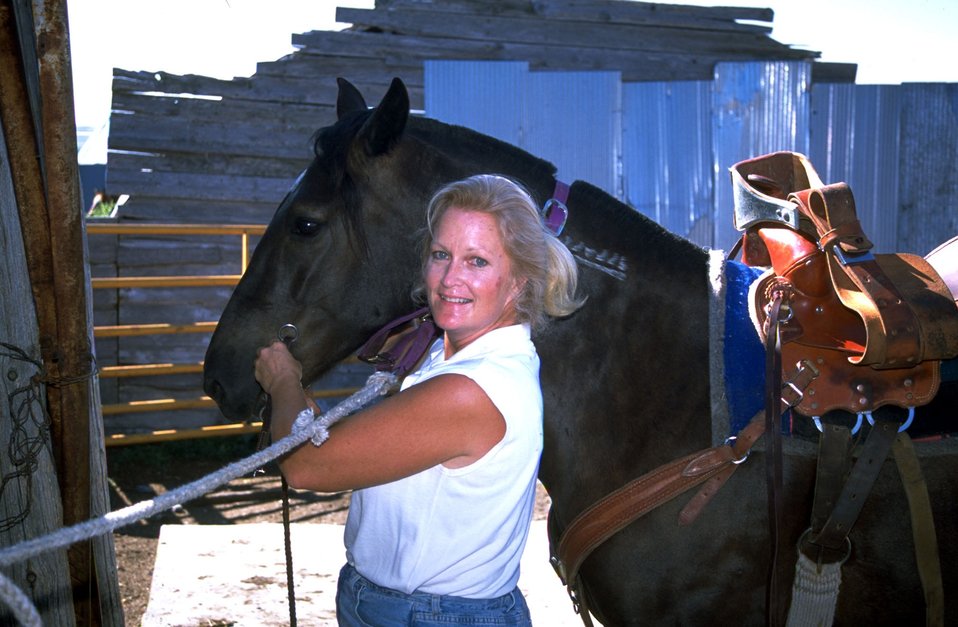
Saddling an Adopted Horse